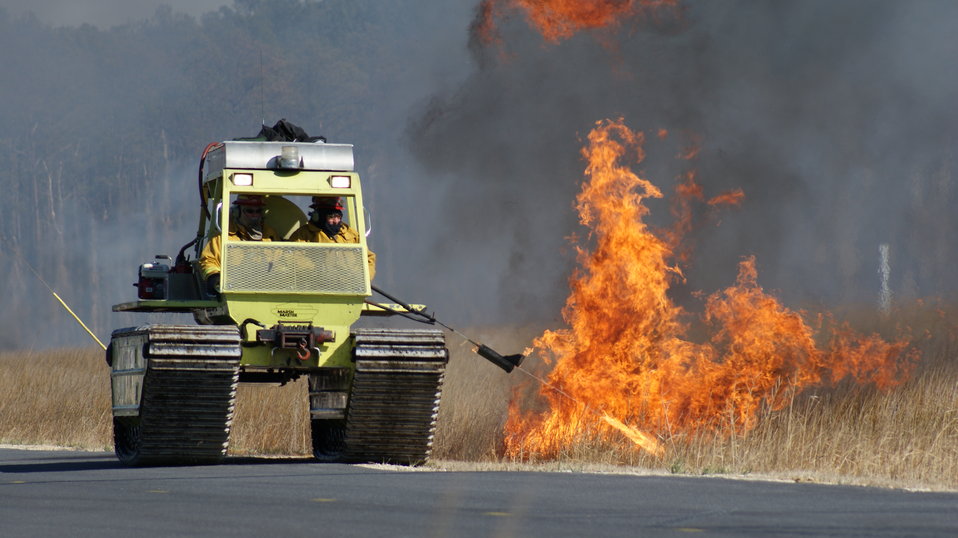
Prescribed burn at Blackwater National Wildlife Refuge in Maryland.